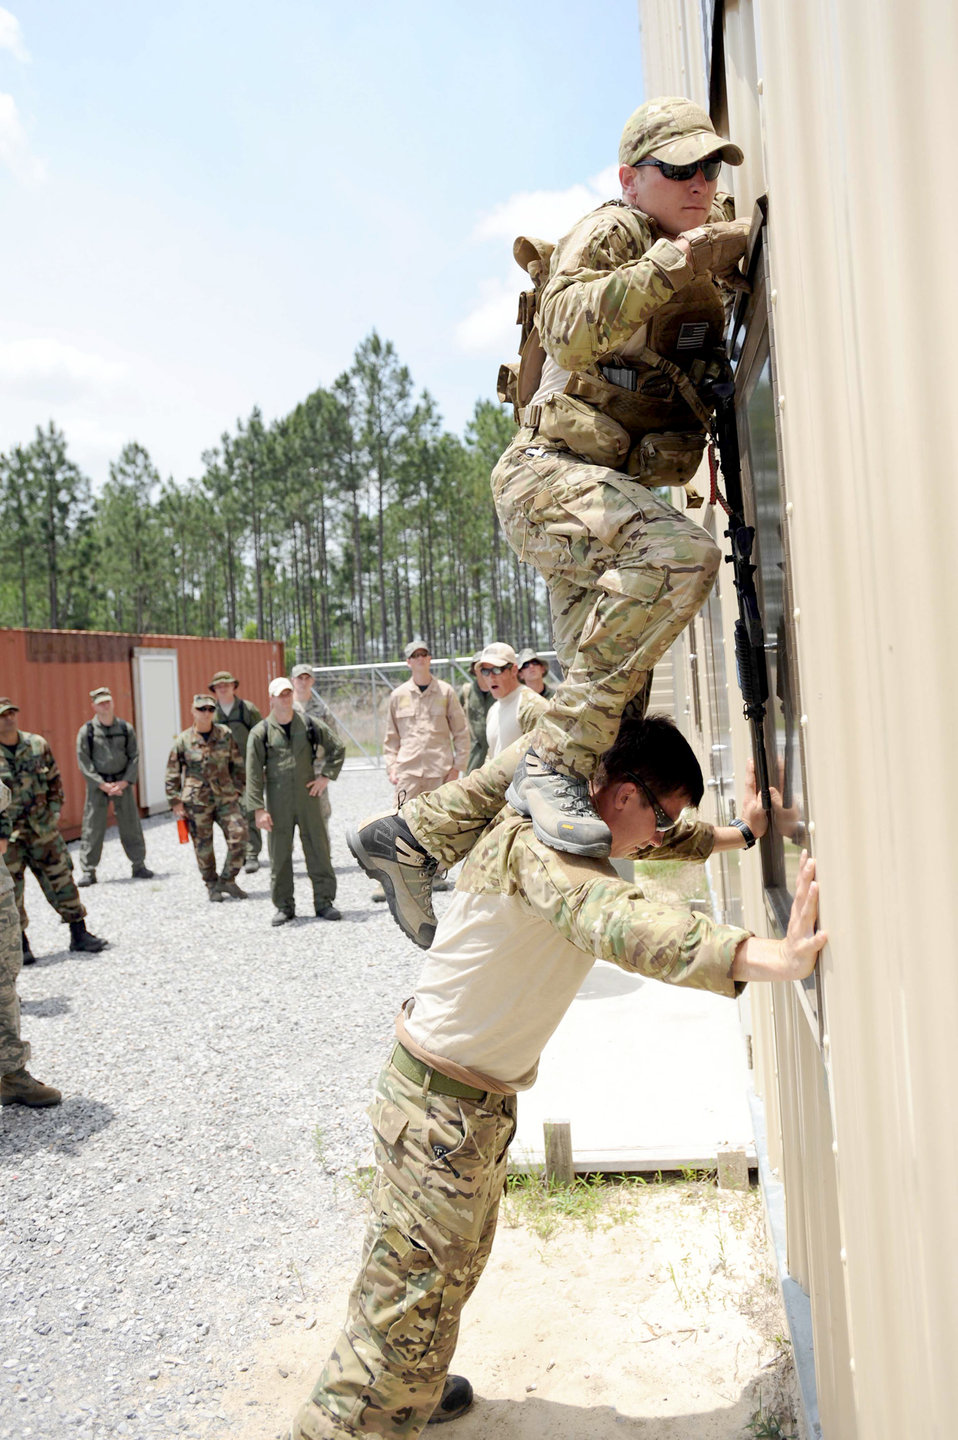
Survival Training vs. OPFOR

Survival, evasion, resistance and escape specialists demonstrate to Airmen how to enter a window on the second floor of a building during combat skills training May 13, 2010, at Eglin Air Force Base Range, Fla.